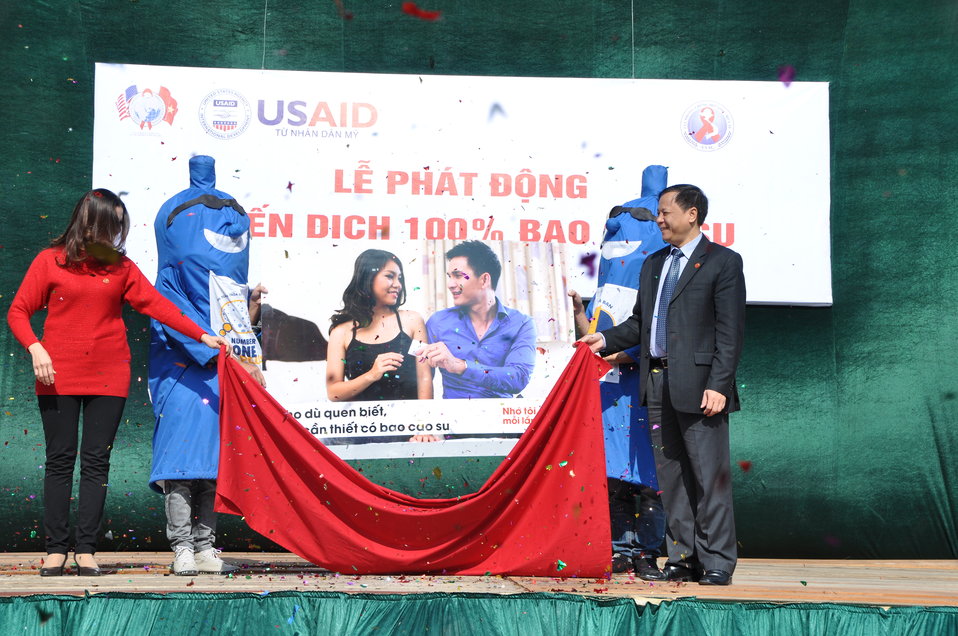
100% Condom Use Campaign Launch, Dec. 2, 2011